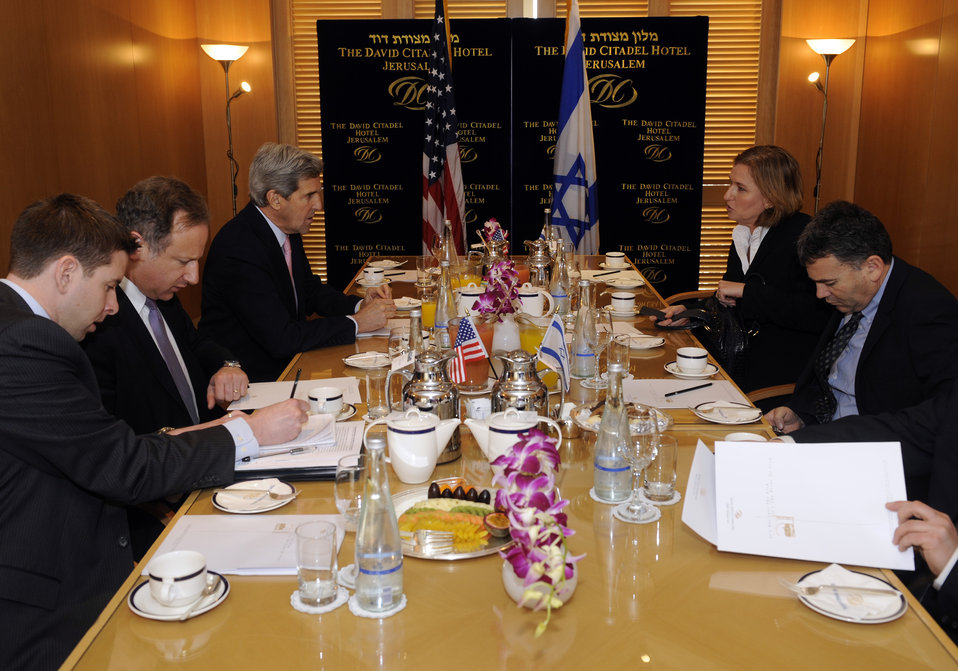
Senator Kerry With Israeli Opposition Leader Tzipi Livni

Senator John F. Kerry speaks with leader of the opposition Tzipi Livni during their meeting at the David Citadel Hotel, Jerusalem, March 1, 2010.